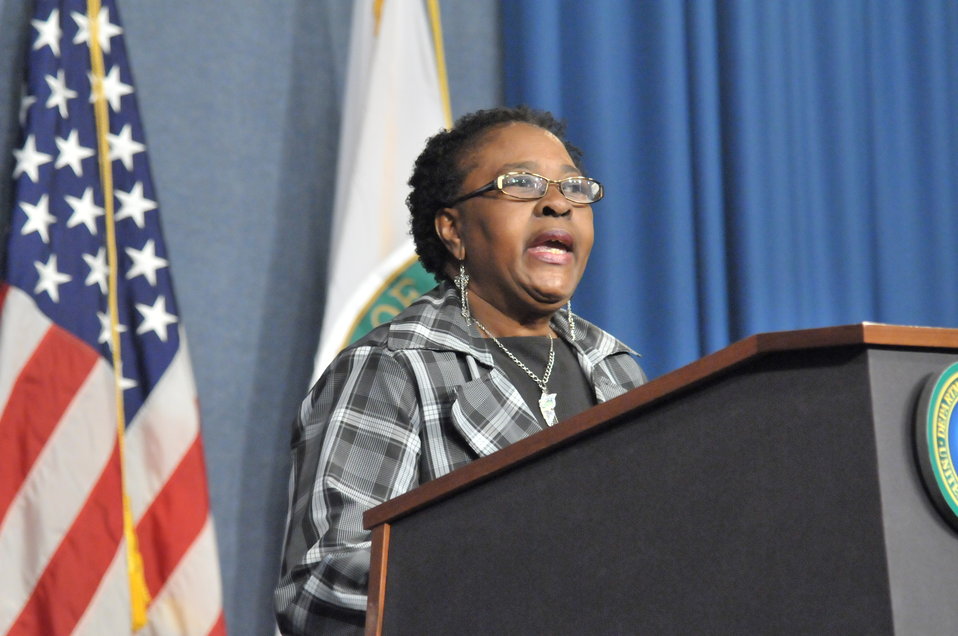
DEPARTMENT OF ENERGY -MARTIN LUTHER KING / BLACK HISTORY MONTH COMMEMORATIVE PROGRAM WITH DOE SECRETARY E. MONIZ IN ATTENDANCE